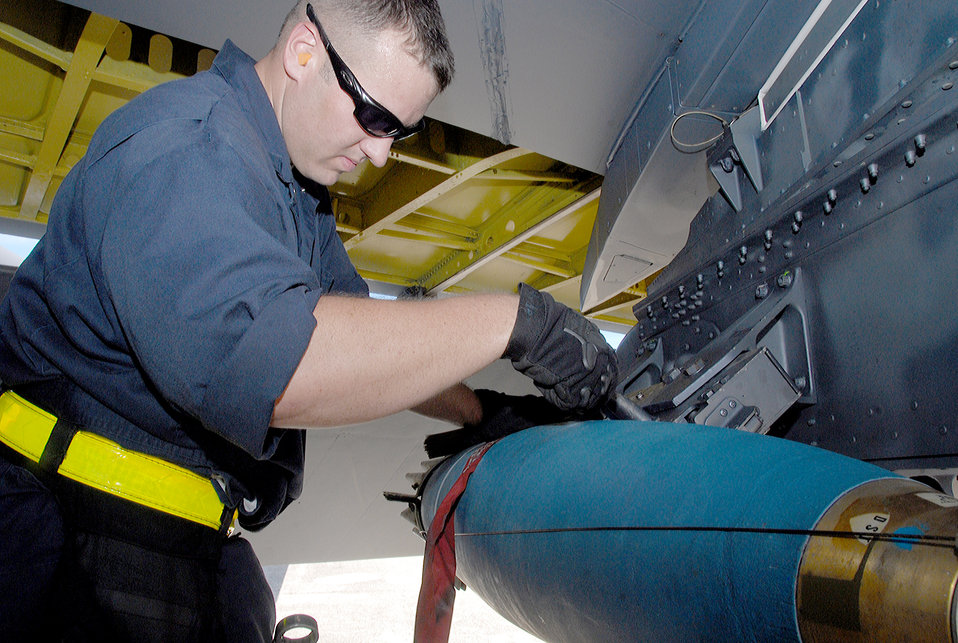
Valiant Shield joint exercise

Staff Sgt. Dustin Hyden uploads an Mk 62 Quickstrike naval mine during Exercise Valiant Shield to a B-52 Stratofortress Sept. 14, 2010, at Andersen Air Force Base, Guam. The Mk 62 is a recoverable, inert-loaded mine that is designed for training aircrews in the techniques of carrying mines and planting minefields.